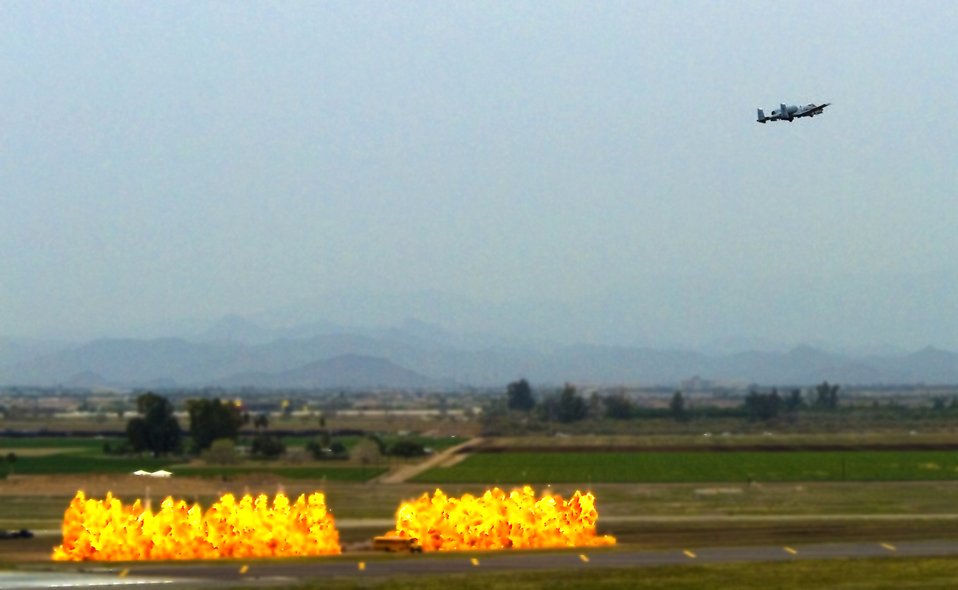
Thunderstorm

Fireballs erupt after an